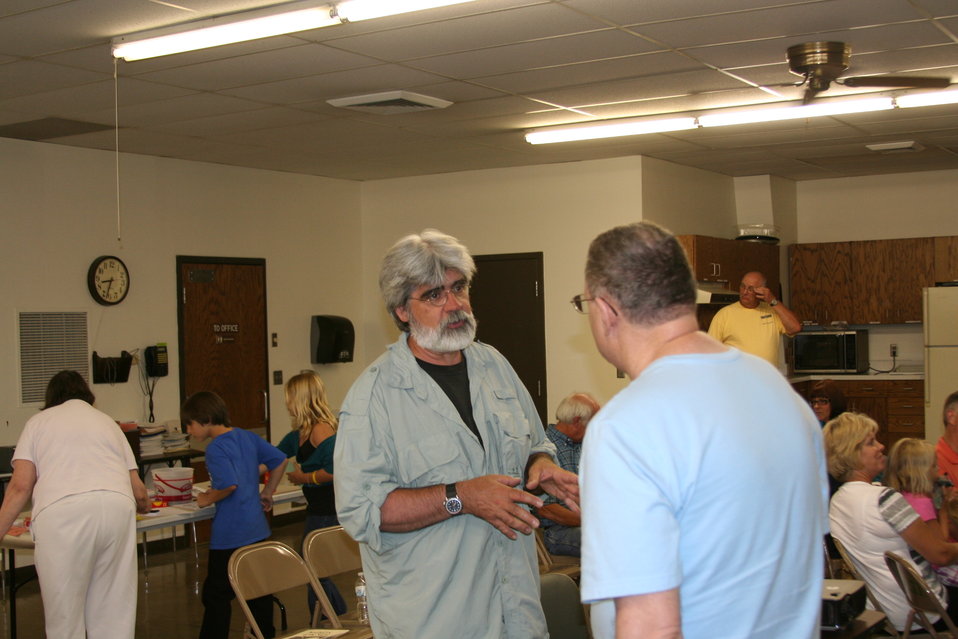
Creatures of the Night 2011

Joel Tigner (bat expert) discusses the life of bats to an interested party.